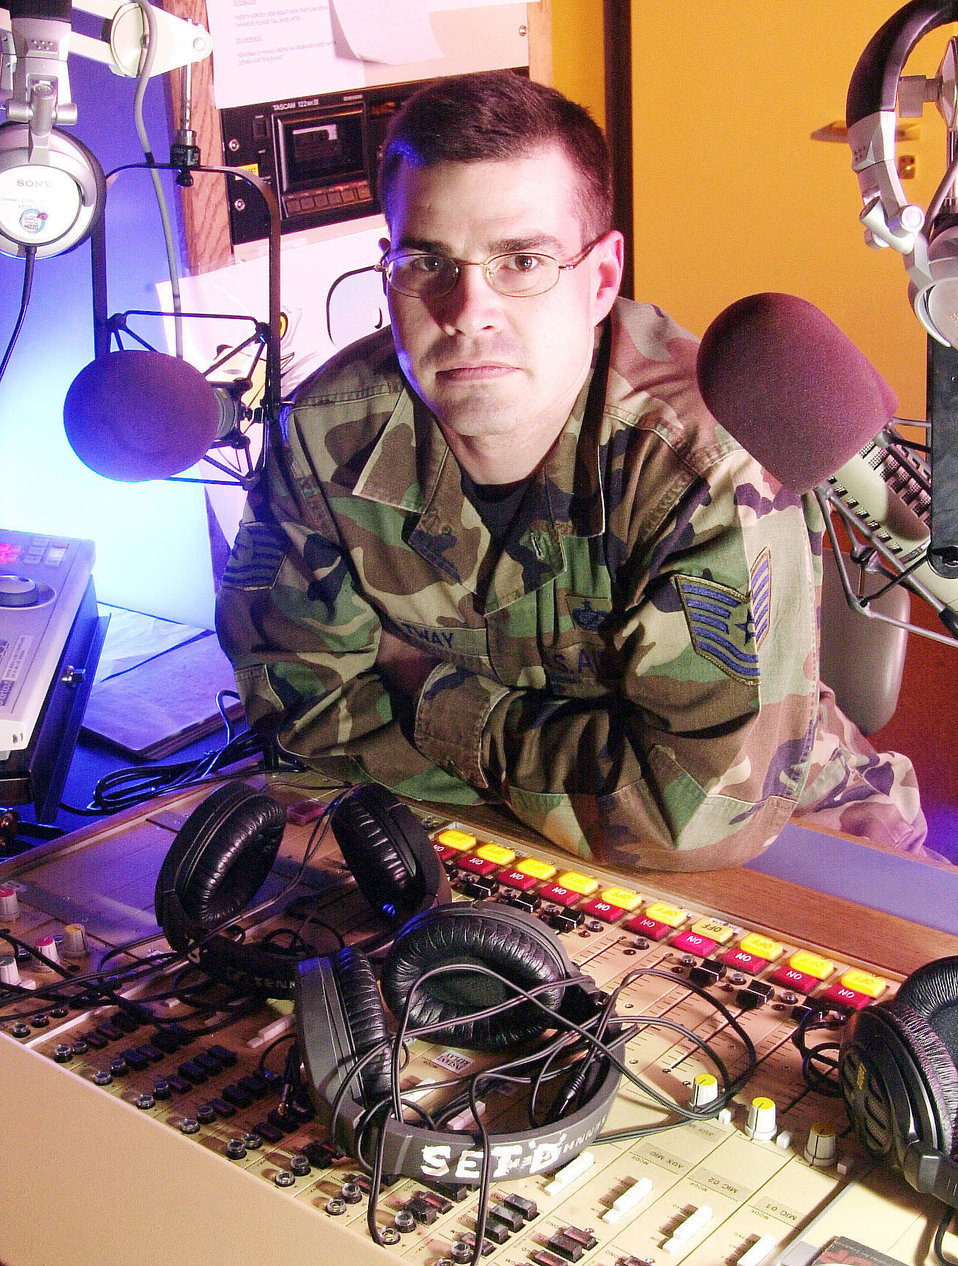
Eagel 810

YOKOTA AIR BASE, Japan -- Tech. Sgt. John Tway, from the Detachment 10, Air Force News-Tokyo, is the host for the Eagle 810 morning radio show. Eagle 810 has an estimated audience of 10 million people daily. The mission of Det 10, AFN-Tokyo, is to provide U.S. military commanders overseas with electronic media resources they need to effectively communicate with members of their command.